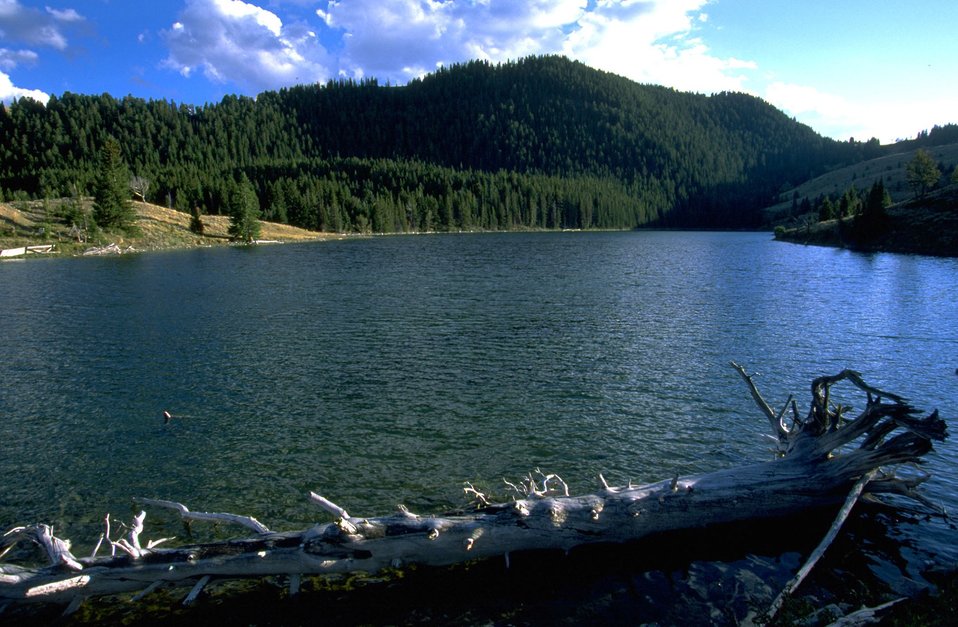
Dead tree in a lake